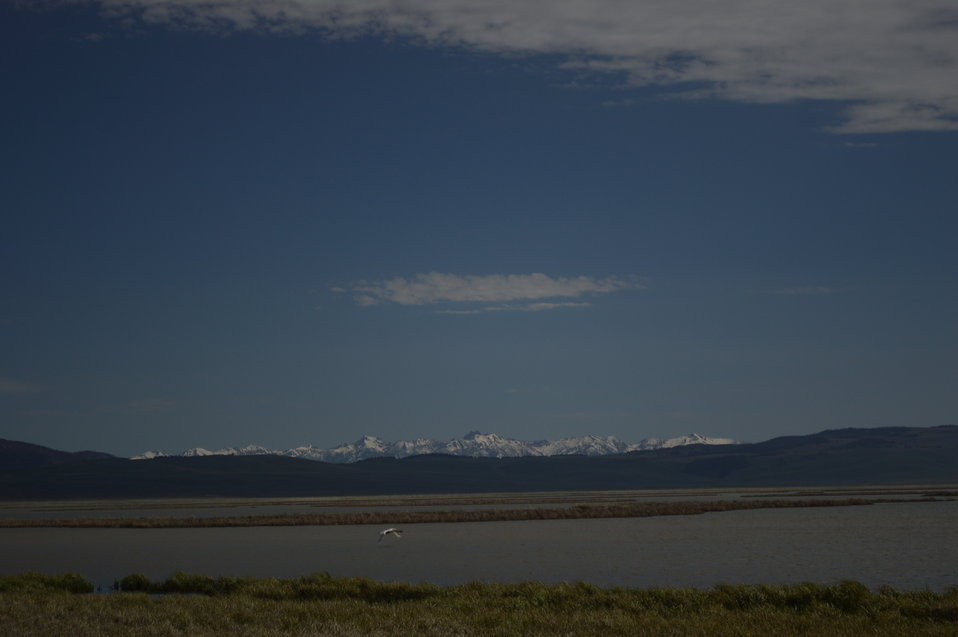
Regional Leadership Visit to Montana 2014